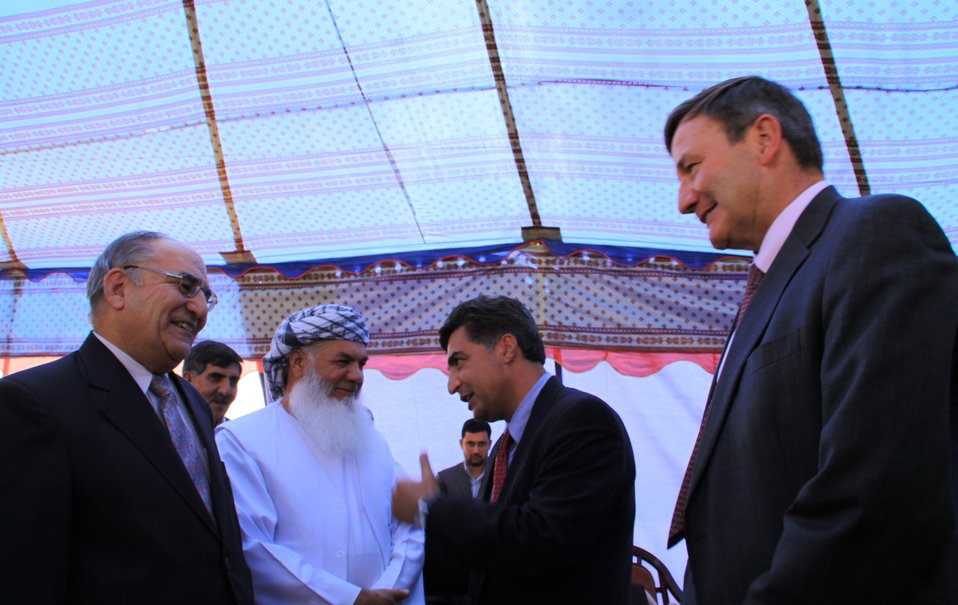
105 MW Tarakhil Power Plant Handover